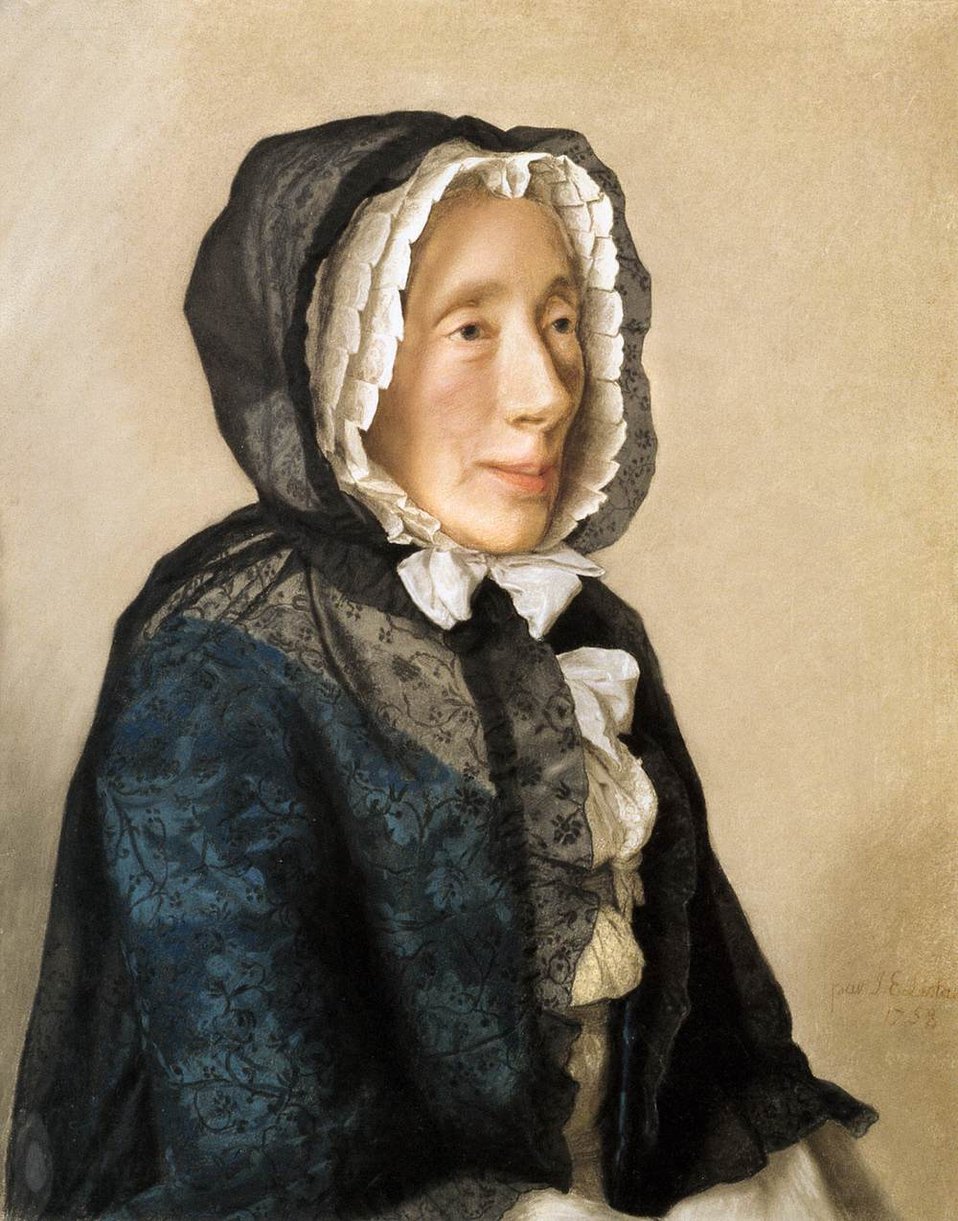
Jean-Étienne Liotard - Madame Jean Tronchin - WGA13066